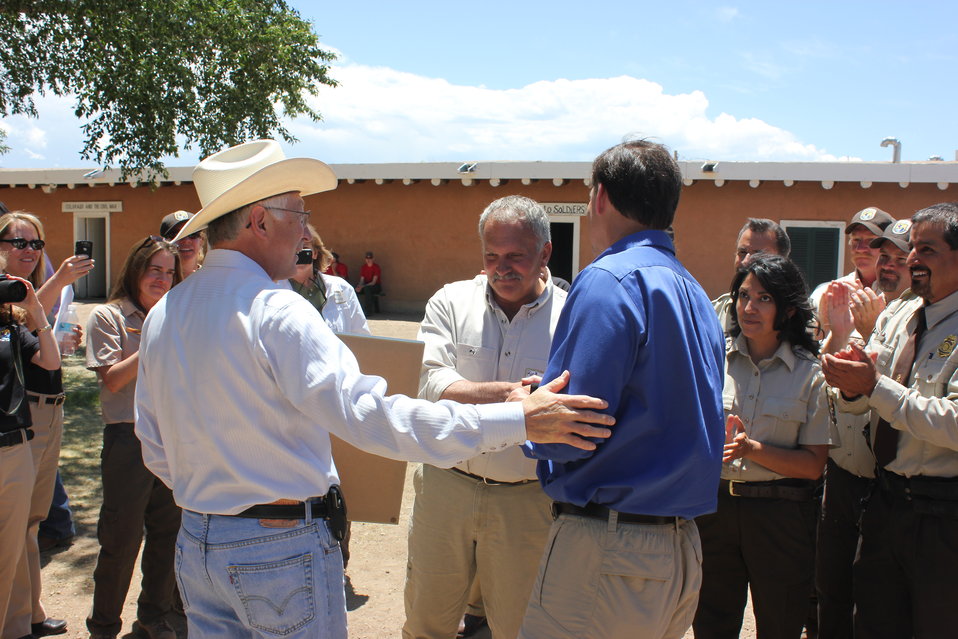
Historic Conservation Easement in Sangre de Cristo Mountains

Interior Secretary, Ken Salazar, and U.S. Fish and Wildlife Director, Dan Ashe, present Rick Schnaderbeck with an award for his many accomplishments throughout his 30 years with the Service.